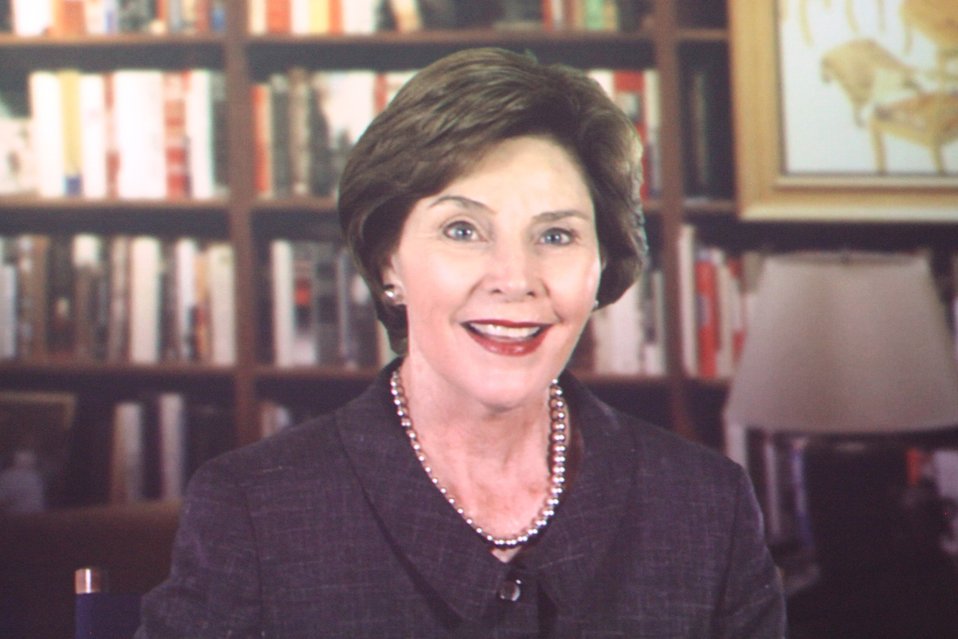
100526 AUAF Graduation 192